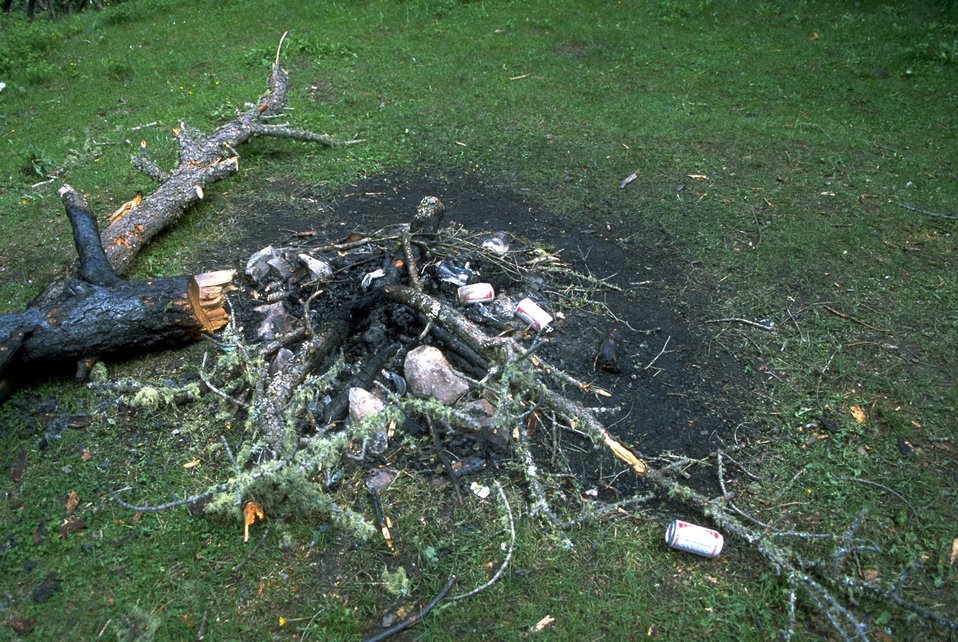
An illegal campfire site and litter in the Judith Mountains